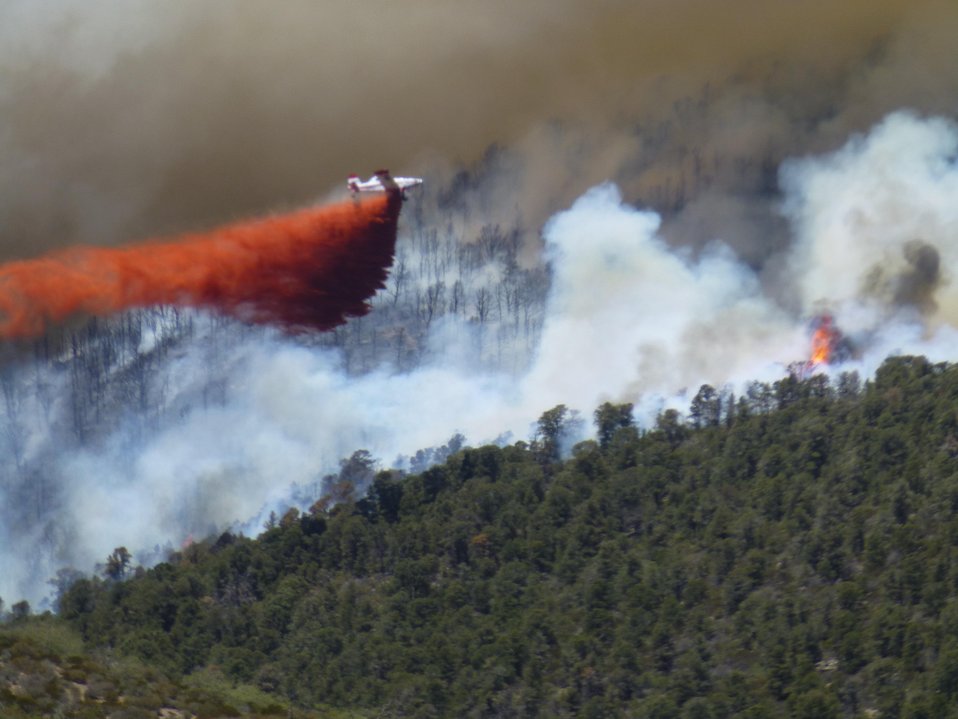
An (Air Tractor) AT-802F air tanker makes a fire retardant drop on Carpenter Fire. The Carpenter Fire in the Toiyabe National Forest near Humboldt, NV was caused by a lightning strike on Jul. 1, 2013. The fire has consumed nearly 27,881acres and is presently 70% contained.